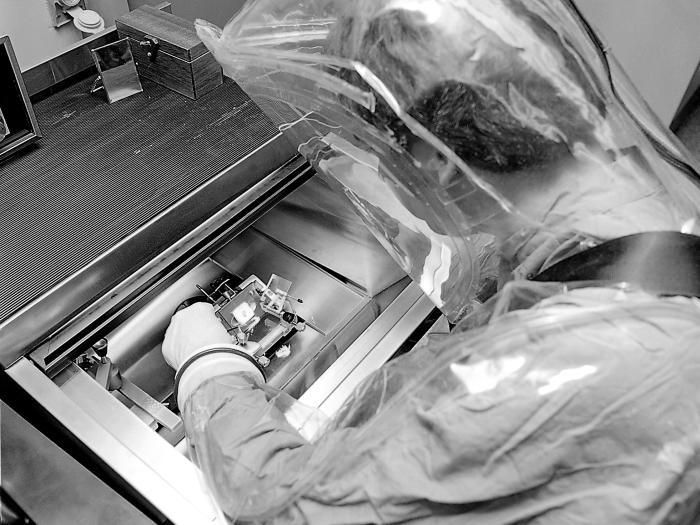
This 1978 photograph depicted Dr. J.V. Lange as he was operating a cryostat apparatus while dressed in a positively-pressurized containment suit. A cryostat is a device that is used to freeze fixed tissue specimens, and slice them using what is called a microtome, into microscopically-thin slices so that they may be observe under a microscope.